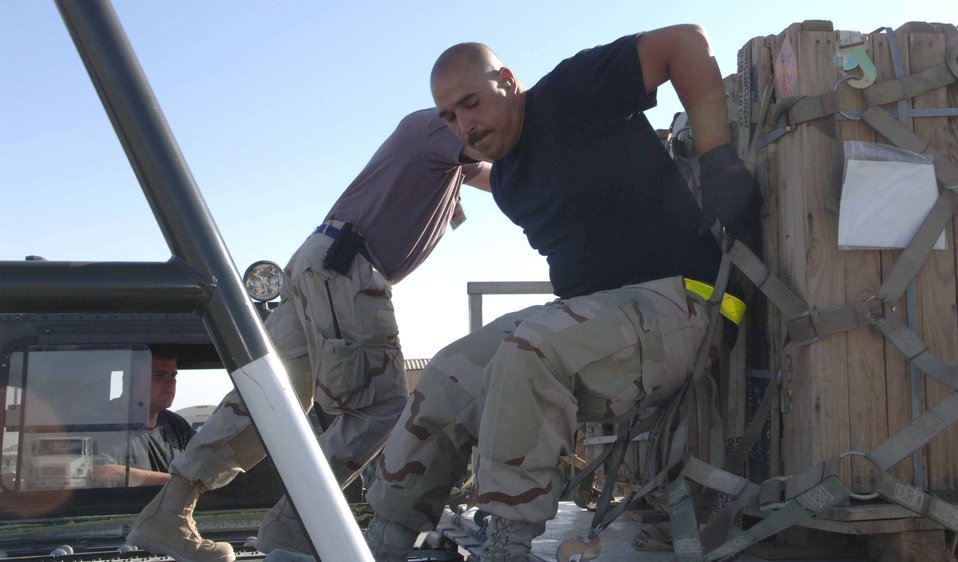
Workin' it

BAGRAM AIR BASE, Afghanistan -- Tech. Sgt. Martin Zamora gives a pallet of munitions a push from a 60K loader onto a high-line dock during a recent delivery here. He is assigned to the 455th Expeditionary Logistics Squadron and is deployed from Charleston Air Force Base, S.C.